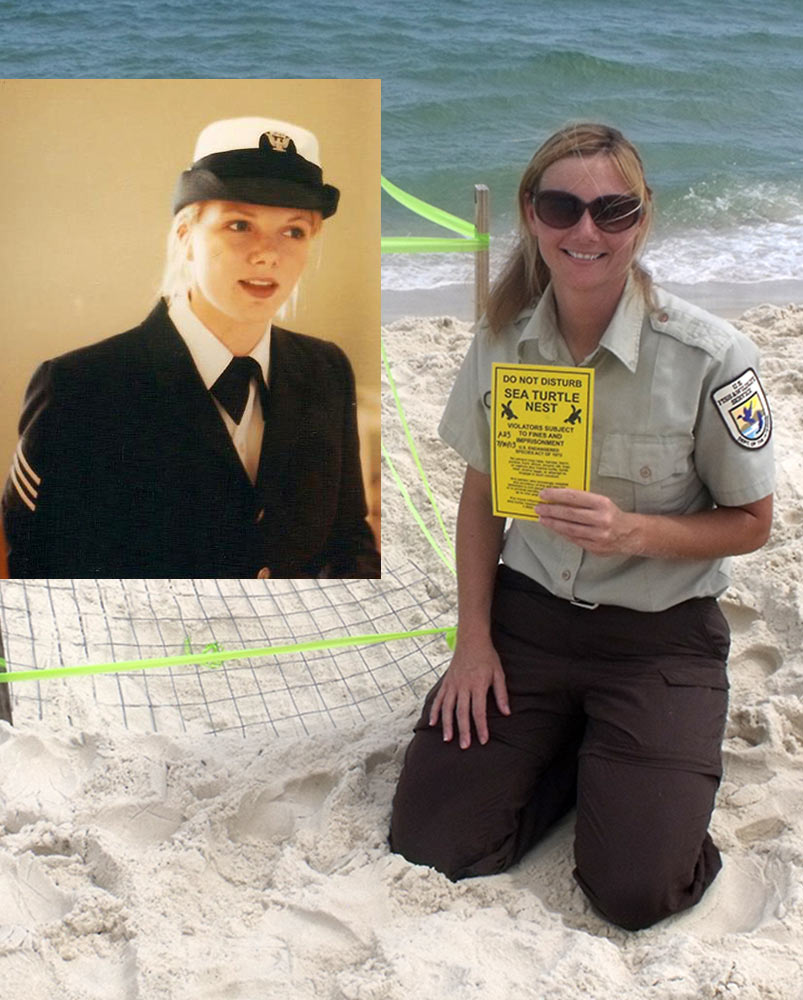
Denise McInturff-Southeast Region

Denise McInturff, Park Ranger at Bon Secour National Wildlife Refuge in Alabama served in the U.S. Navy for eight years. She served on board the USS McFaul DDG74 an Arleigh Burke-class destroyer for sea duty. For shore duty, she was stationed at Seal Beach Naval Weapon Station in California where she volunteered at the Seal Beach NWR.